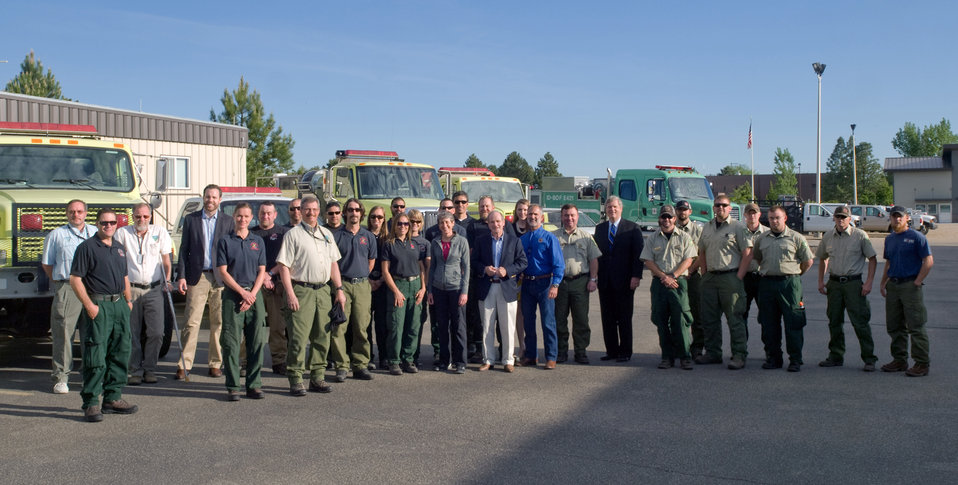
Interior Secretary Sally Jewell and Agriculture Secretary Tom Vilsack stand with employees at the National Interagency Fire Center (NIFC) in Boise, ID on Monday, May 13, 2013. Agriculture Secretary Vilsack and Interior Secretary Jewell provided an outlook for the upcoming fire season and outlined the federal government’s efforts to ensure collaboration in protecting Americans from wildfire.